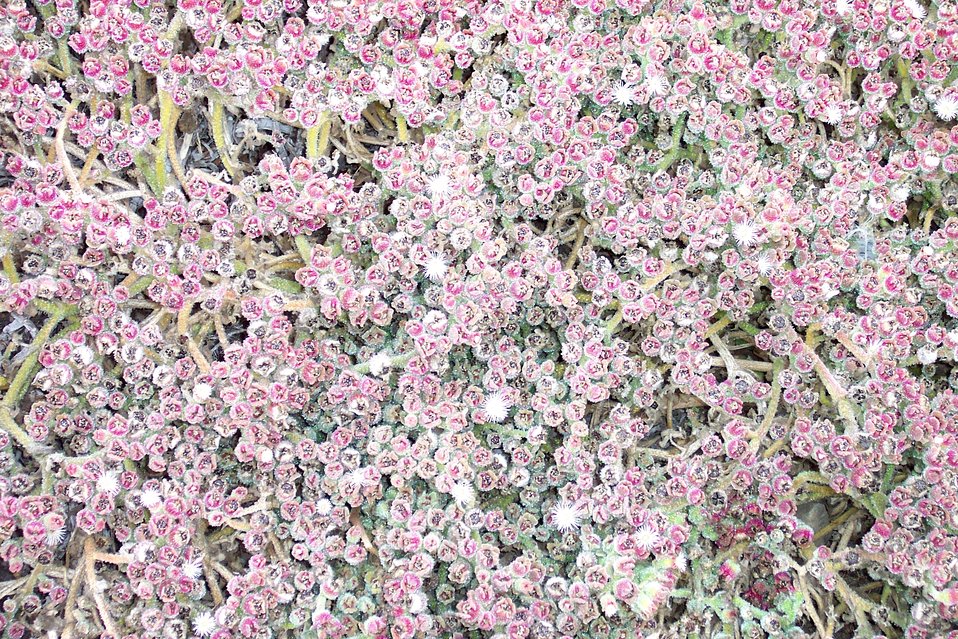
A bed of flowers at Point Lobos.